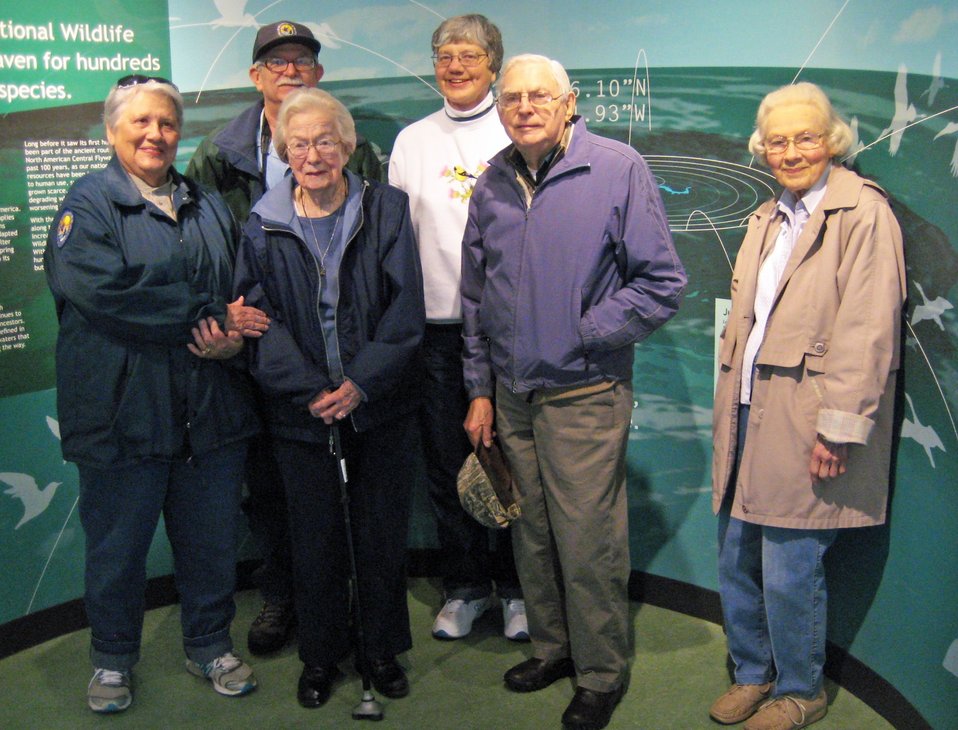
Karl and ladies 2